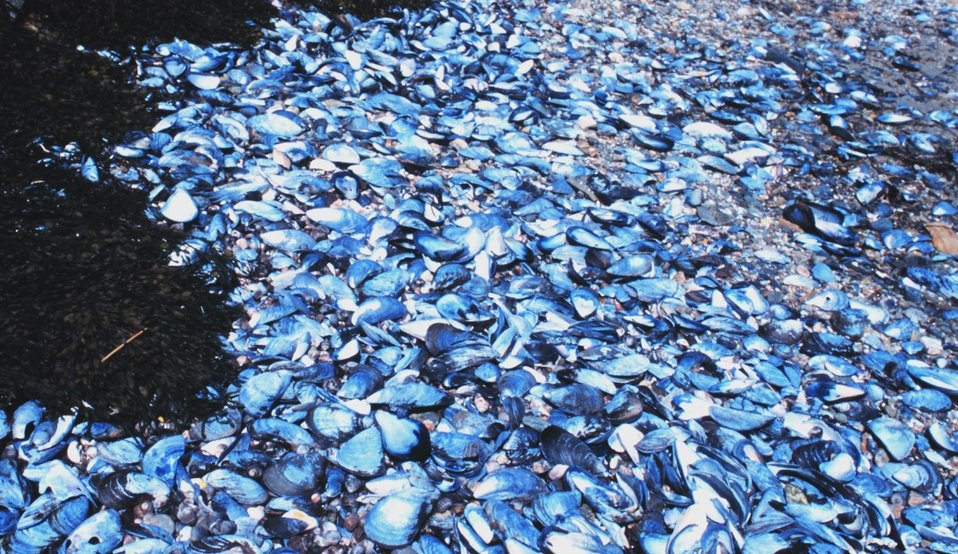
Mussel shells and seaweed on a Maine beach.